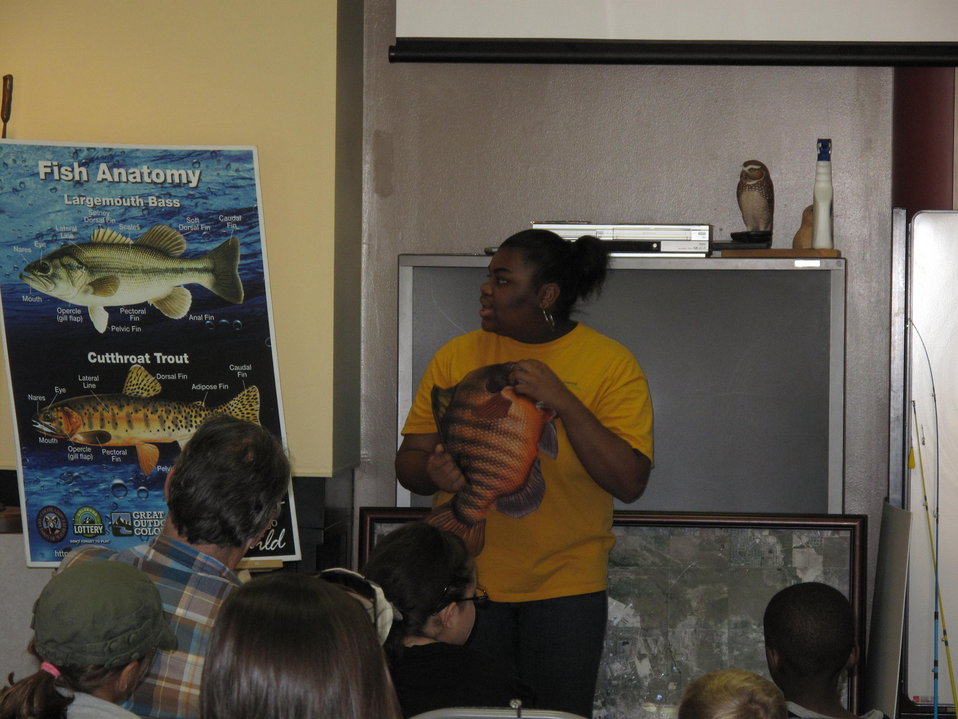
ELK fishing trip to RM Arsenal